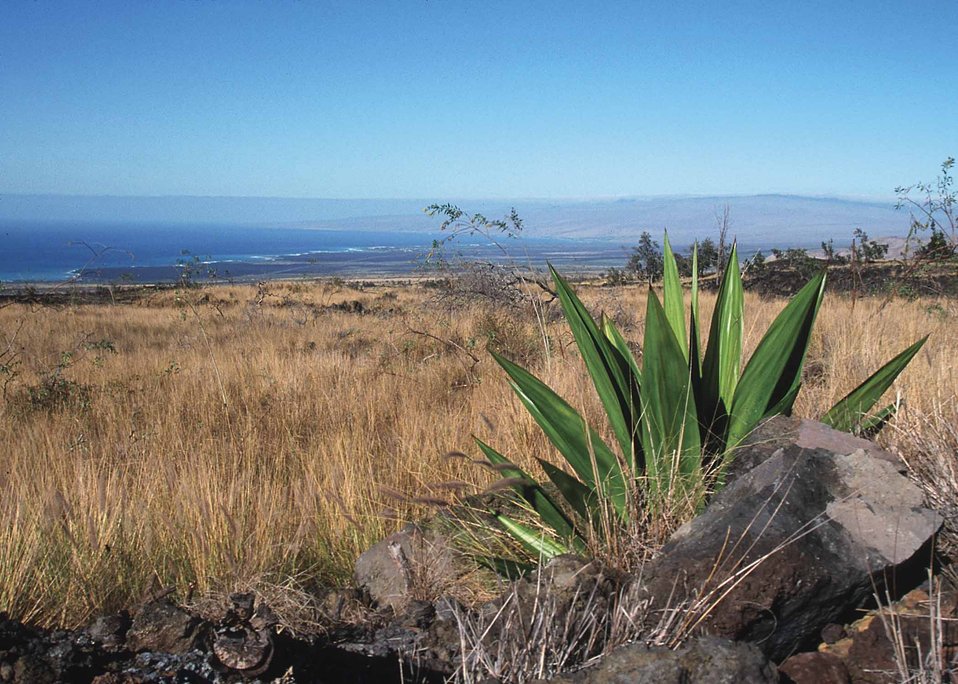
View of Ocean from Hawaii.